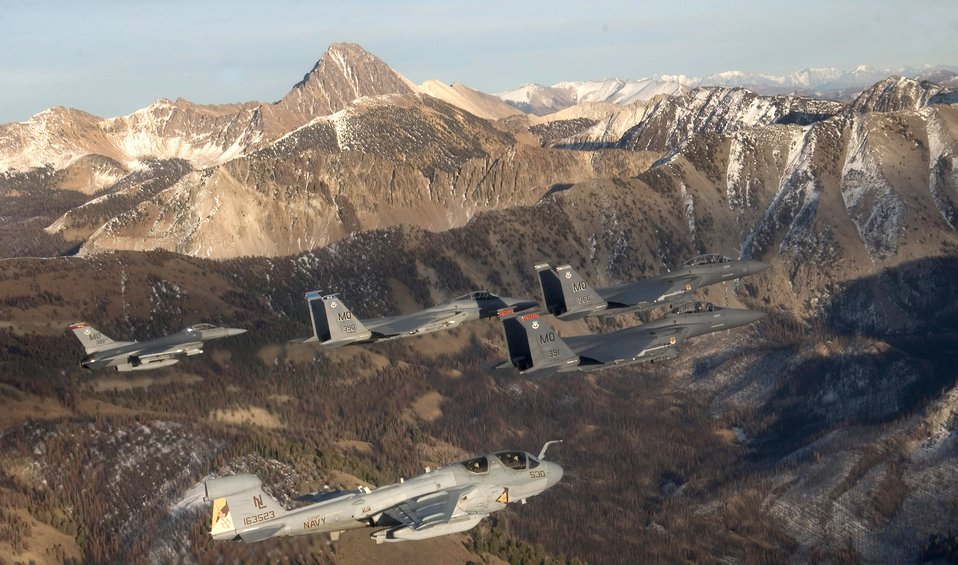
The sound of freedom over Idaho

A five-ship formation, flying over the Idaho Sawtooth Mountains Nov. 1, comprised two F-15E Strike Eagles, an F-15 Eagle, an F-16 Fighting Falcon and an EA-6B Prowler.